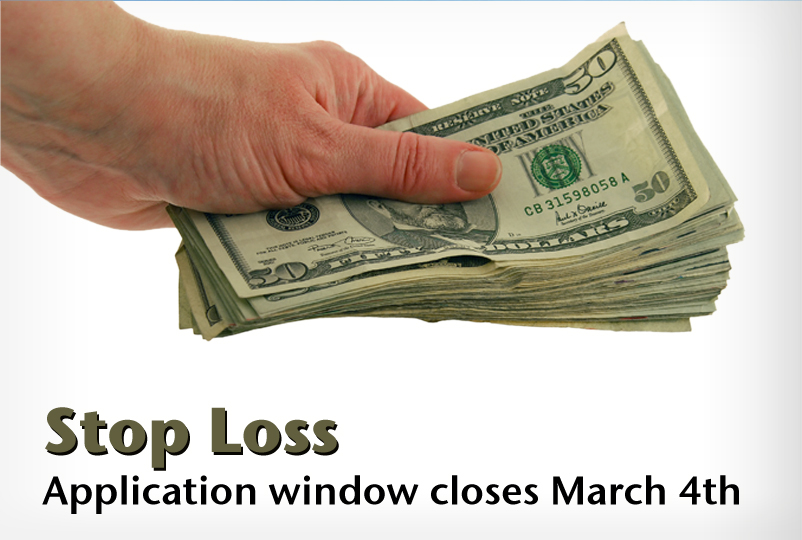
Stop Loss